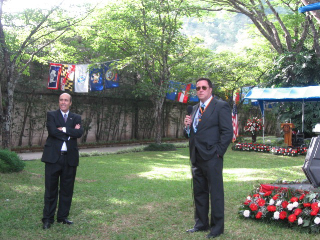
July 4th Celebration at U.S. Embassy in Honduras

U.S. Ambassador to Honduras Hugo Llorens and General Services Officer Gerald Blackburn thank the U.S. Embassy Tegucigalpa in Honduras’ team after the U.S. Independence Day celebration at the Ambassador’s residence in Tegucigalpa, Honduras, on July 2, 2010.